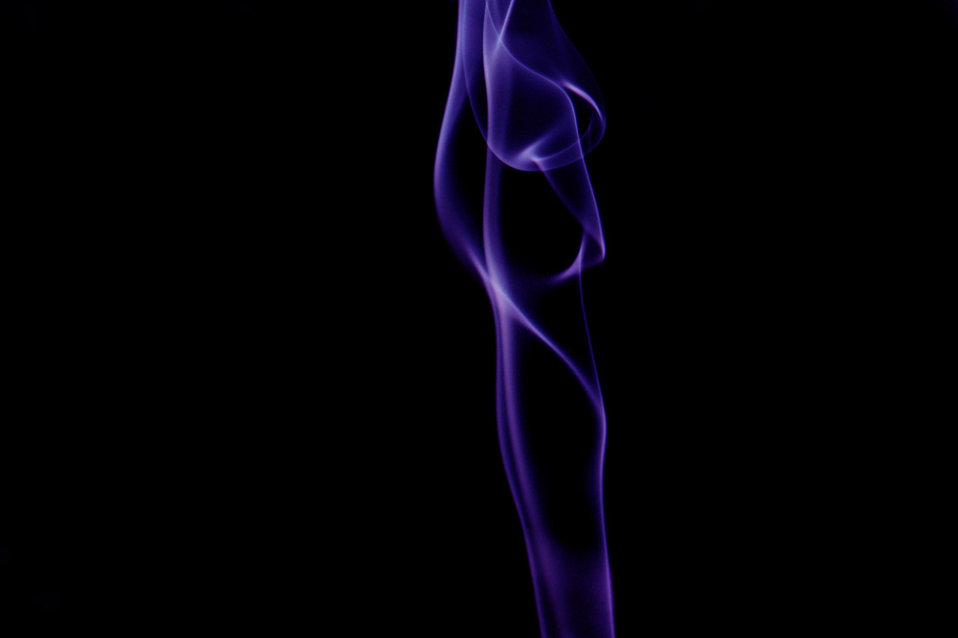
Smoke

Colorful smoke.